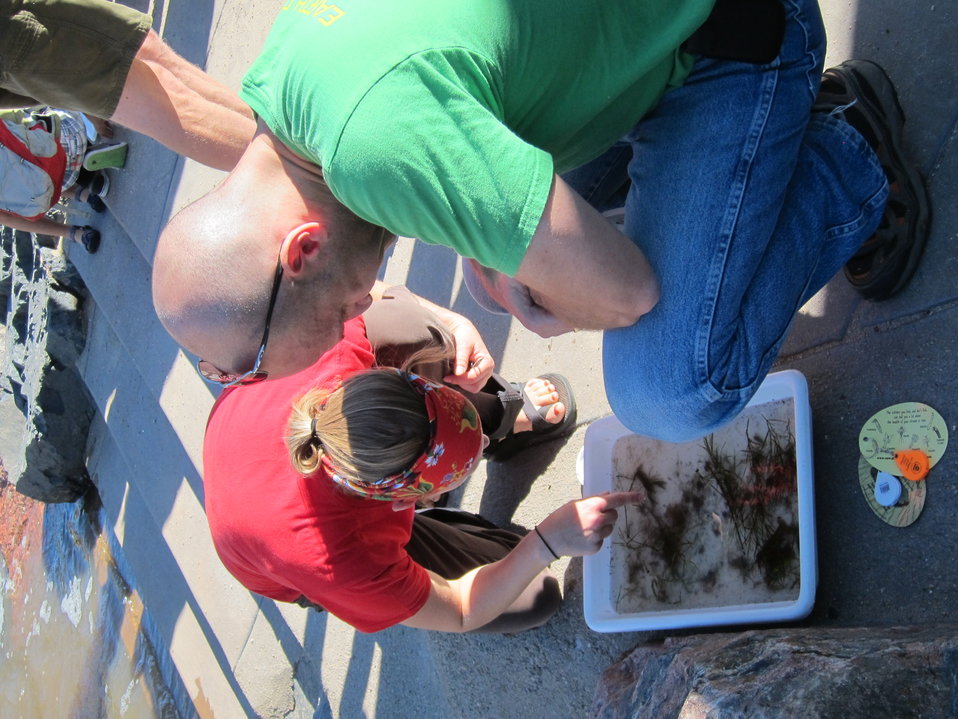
September 18, 2013 - EPA leadership gets in on the action

Region 8 Deputy Administrator, Howard Cantor, joined the Platte River water sampling event. Volunteers gave students reference cards so they could identify the macro-invertebrates gathered from the South Platte River in their Denver backyard.